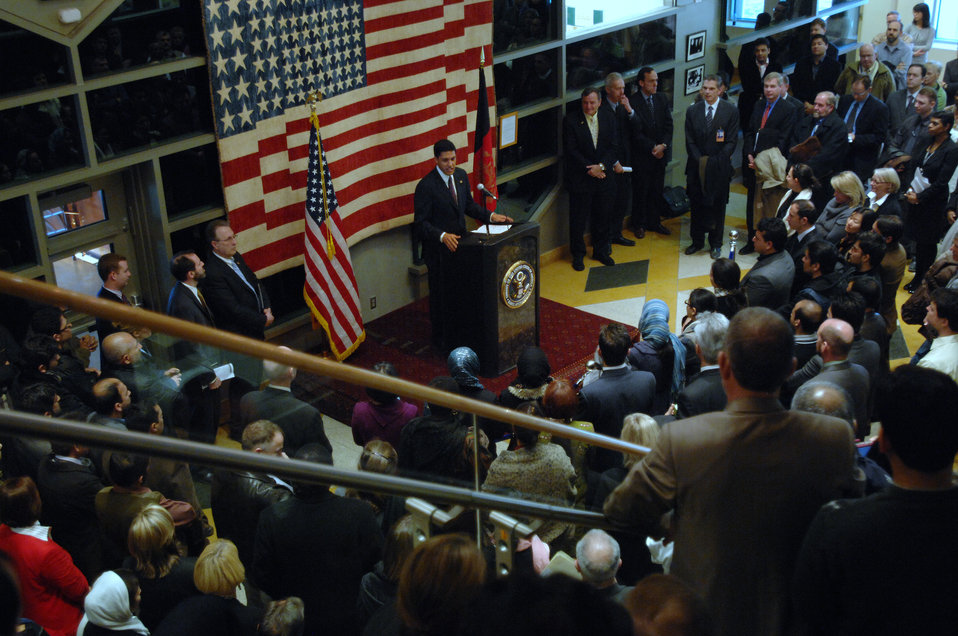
110208sv Shah054

Dr. Rajiv Shah, Administrator of the United States Agency for International Development (USAID), holds a town hall meeting at the U.S. Embassy in Kabul, Afghanistan on Tuesday, February 8, 2011. (S.K. Vemmer/Department of State)